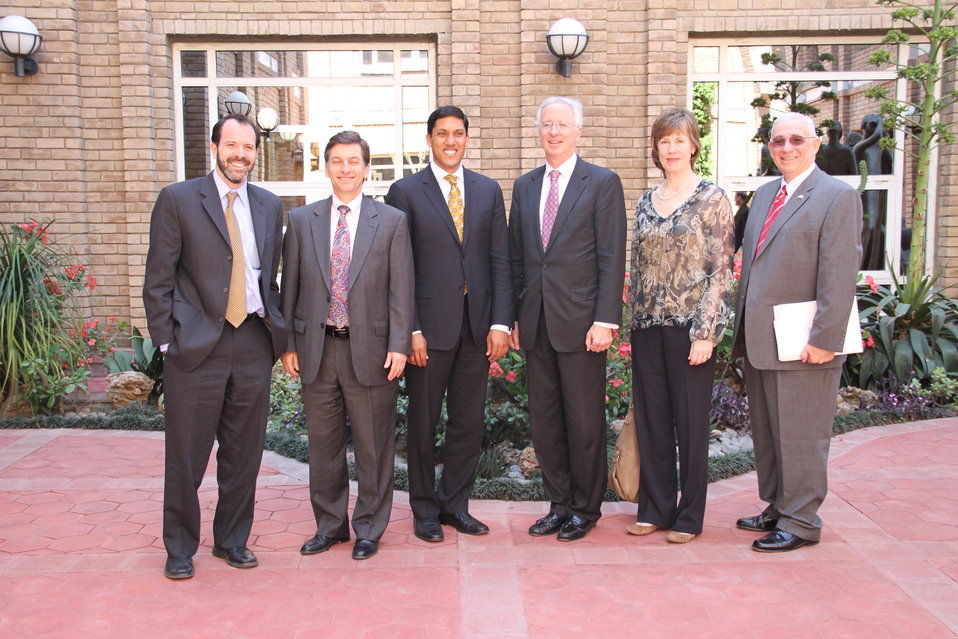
Photo Exhibition Celebrate US-PAK Cooperation at PNCA, Islamabad on April 13, 2012

Mr. Andrew Sisson, Dr. Rajiv Shah, Mr. Cameron Munter, Marilyn Wyatt